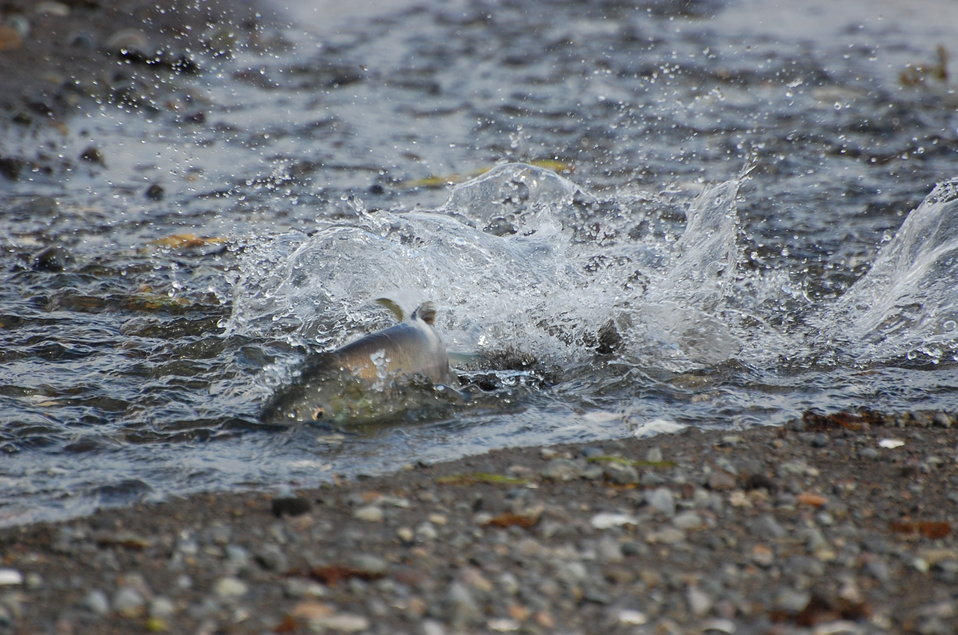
Pink Salmon at Cold Bay

Izembek National Wildlife Refuge